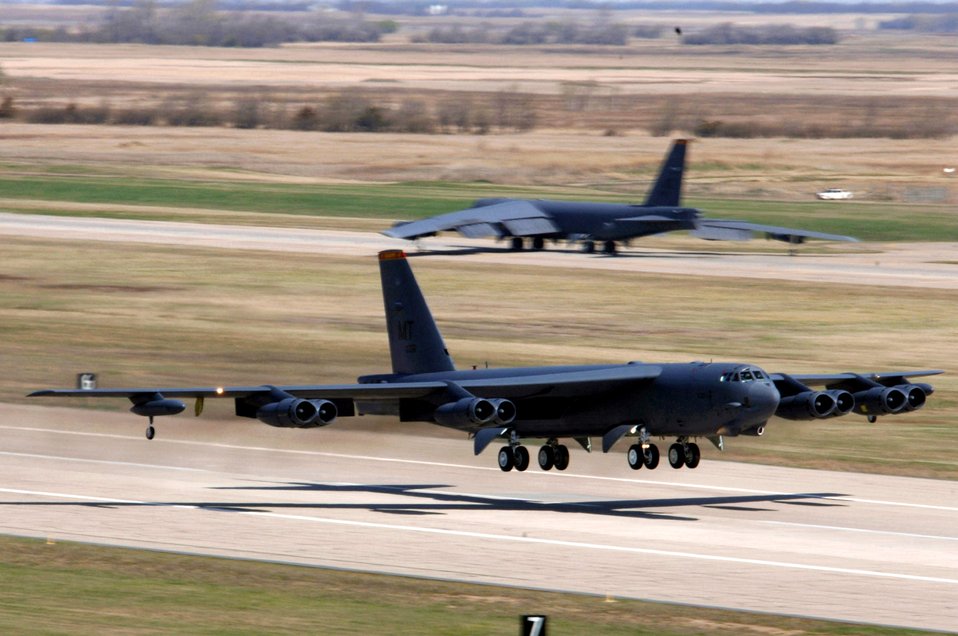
Rapid launch at Minot

A B-52 Stratofortress takes off from Minot Air Force Base, N.D., during a nine-ship rapid-launch generation exercise on Thursday, April 27, 2006. Generation exercises test the base's ability to perform its mission.